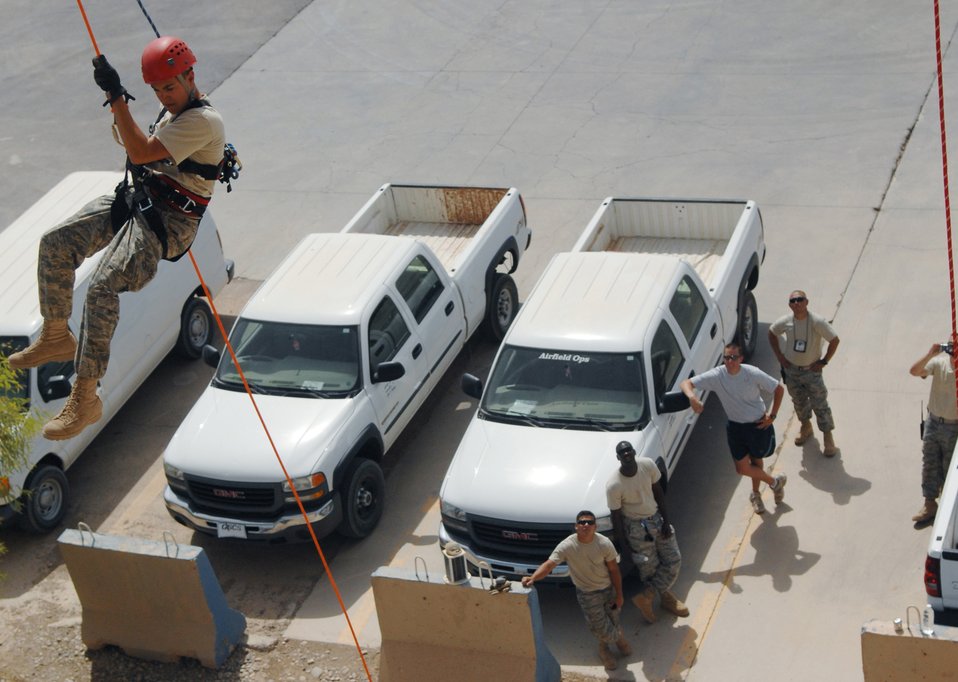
Balad firefighters rappel tower

A crowd of Airmen watch Senior Airman Mark Born rappel down the face of the control tower at Joint Base Balad, Iraq, Aug. 20, 2009, during a training exercise. He is a firefighter with the 332nd Expeditionary Civil Engineer Squadron.